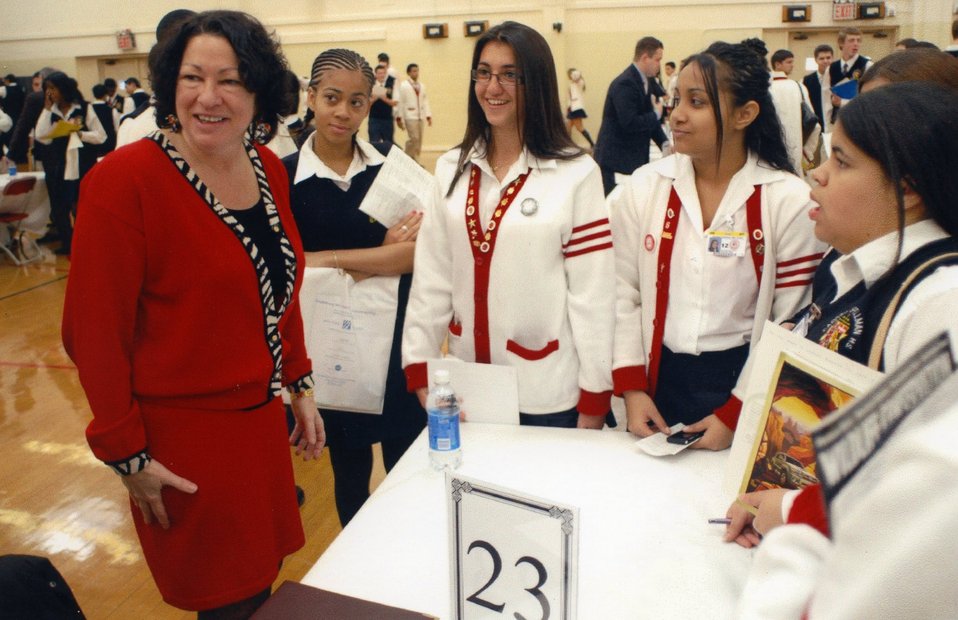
HS Youth 1

Sotomayor visits students at her alma mater, Cardinal Spellman High School, in New York.